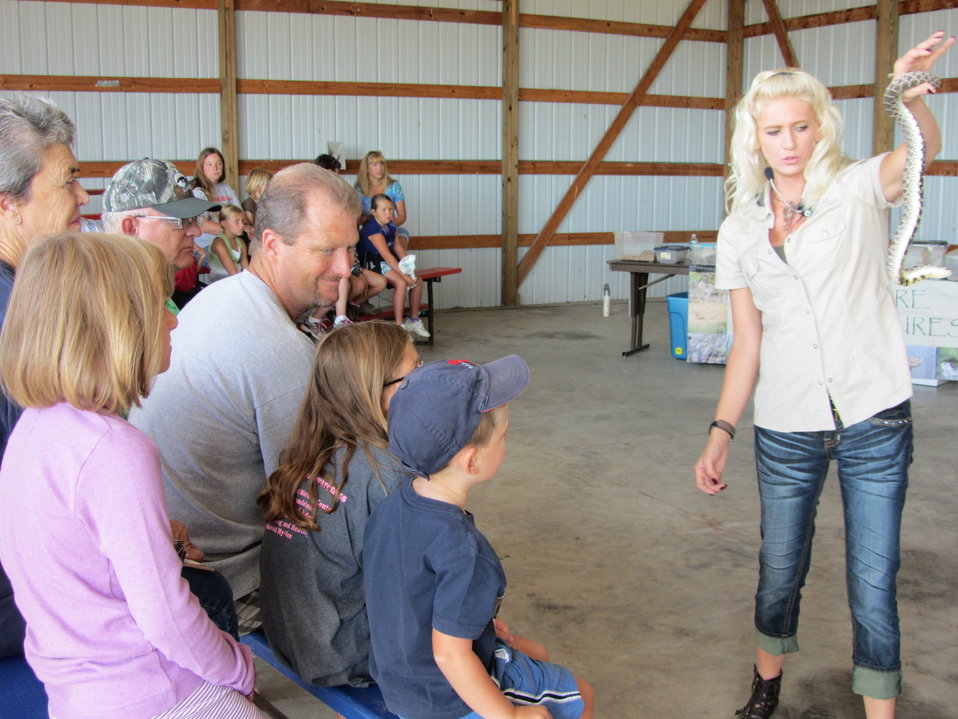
2011 Huron Prairie Fest